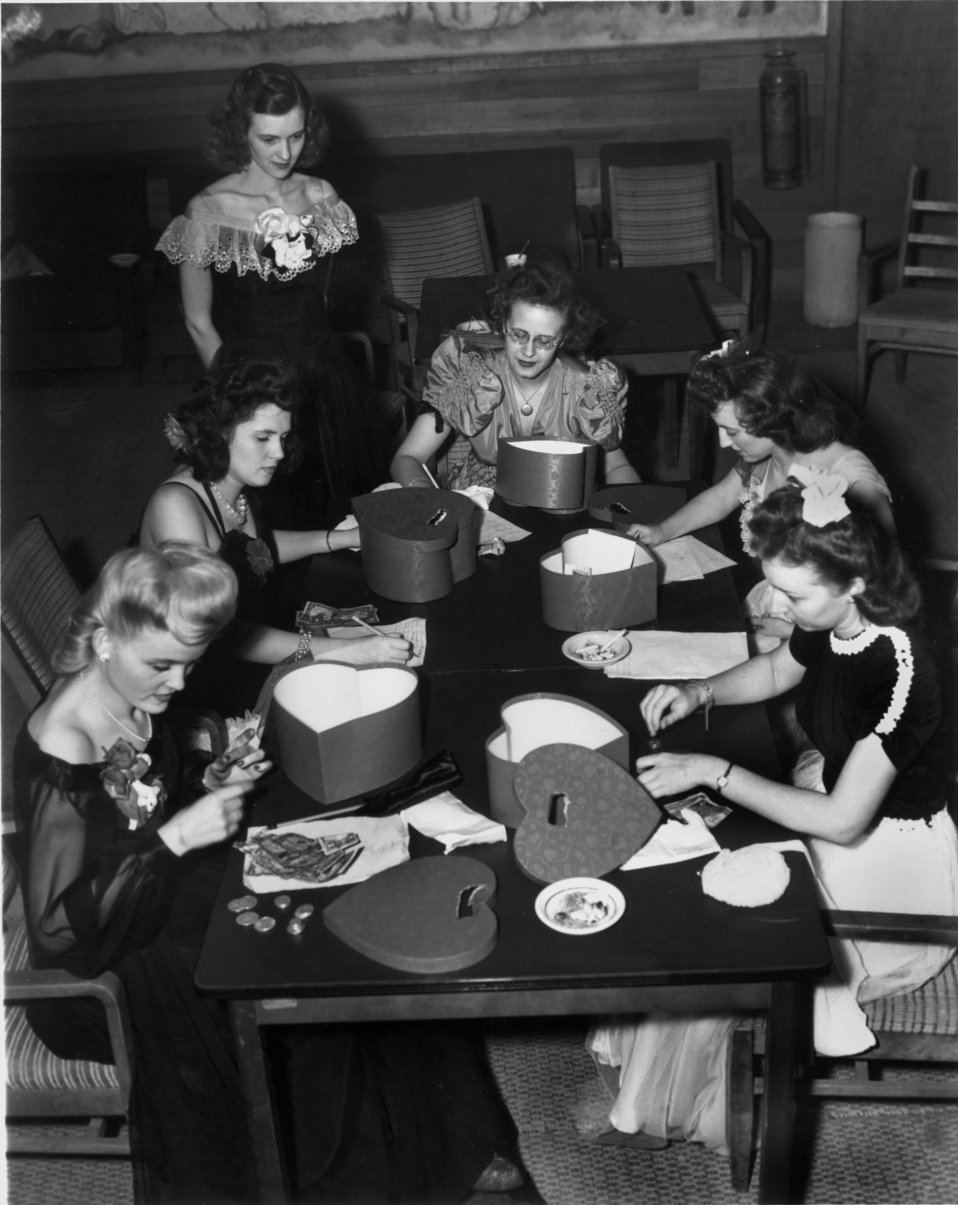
Valentine Dance Oak Ridge

pro 304-1 DOE photo Ed Westcott 2/22/45
Oak Ridge Tennessee
L to R
Frances McSherry/Rose Mary Booth/Betty Szabs/Eunice Belding/Maycene Marley Virginia Jones